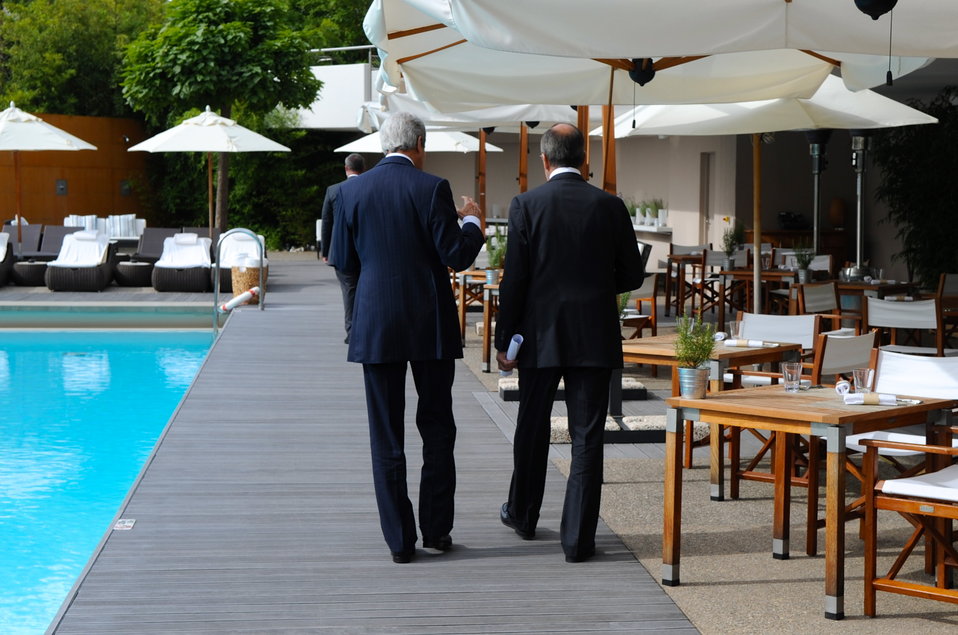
Secretary Kerry, Russian Foreign Minister Lavrov Take Poolside Walk

10:57 a.m., September 14, 2013 - U.S. Secretary of State John Kerry and his Russian counterpart, Foreign Minister Sergey Lavrov, walk beside the pool deck of the Hotel Intercontinental in Geneva, Switzerland, after reaching an agreement to eliminate Syrian chemical weapons.